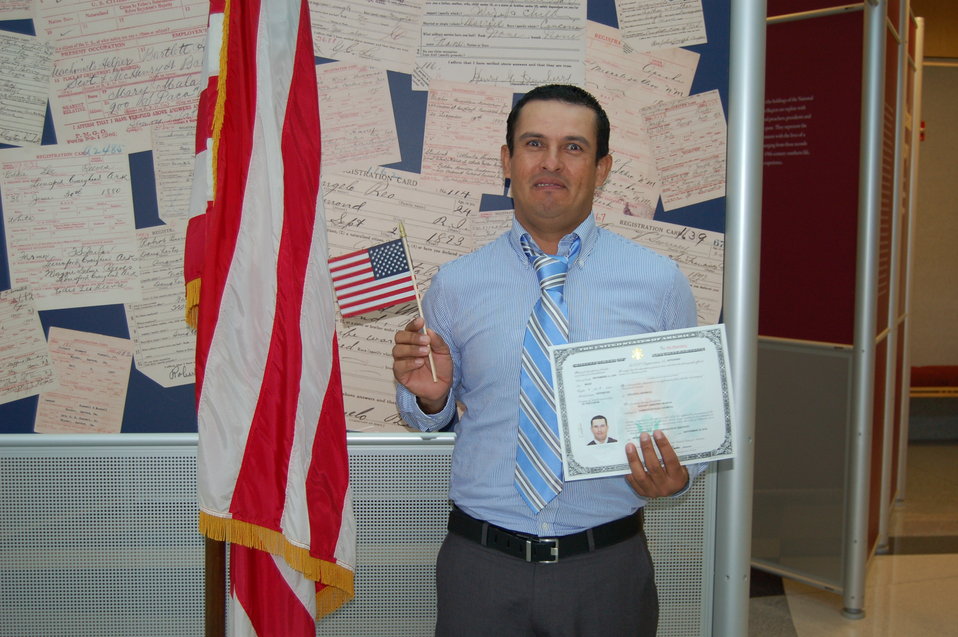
New Citizens